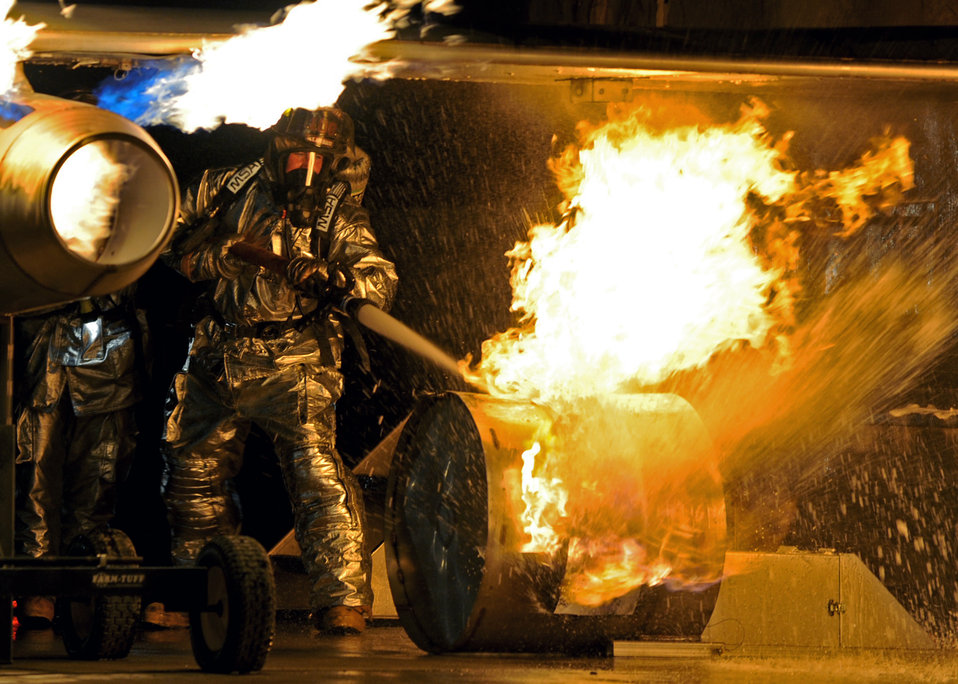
No burn zone

Firefighters from the 386th Expeditionary Civil Engineer Squadron practice extinguishing an aircraft fire at an air base in Southwest Asia Oct. 27, 2010. A mobile aircraft firefighter trainer was used during the two-day, live-fire training with teams extinguishing interior and exterior fires.